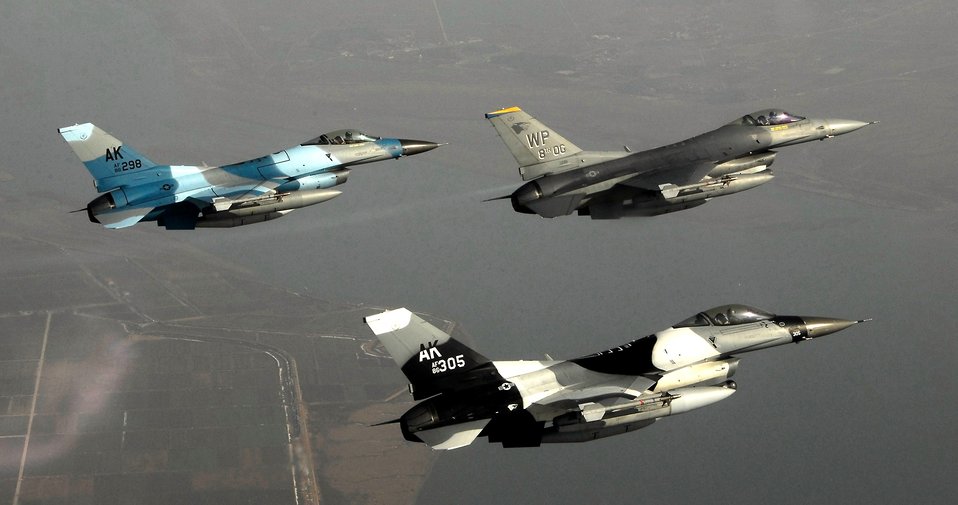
At home on the range

F-16 Fighting Falcon pilots from the 80th Fighter Squadron at Kunsan Air Base, South Korea, fly a training mission over the South Korean peninsula Jan. 9.